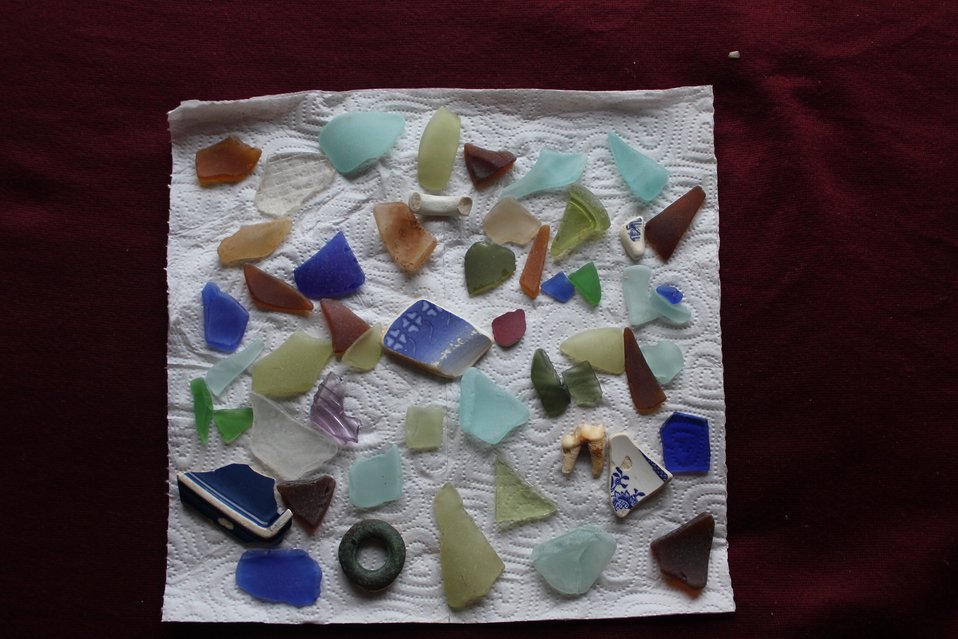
The story of St. Michael told in glass remnants. Russian, American, and Chinese glass and porcelain fragments.